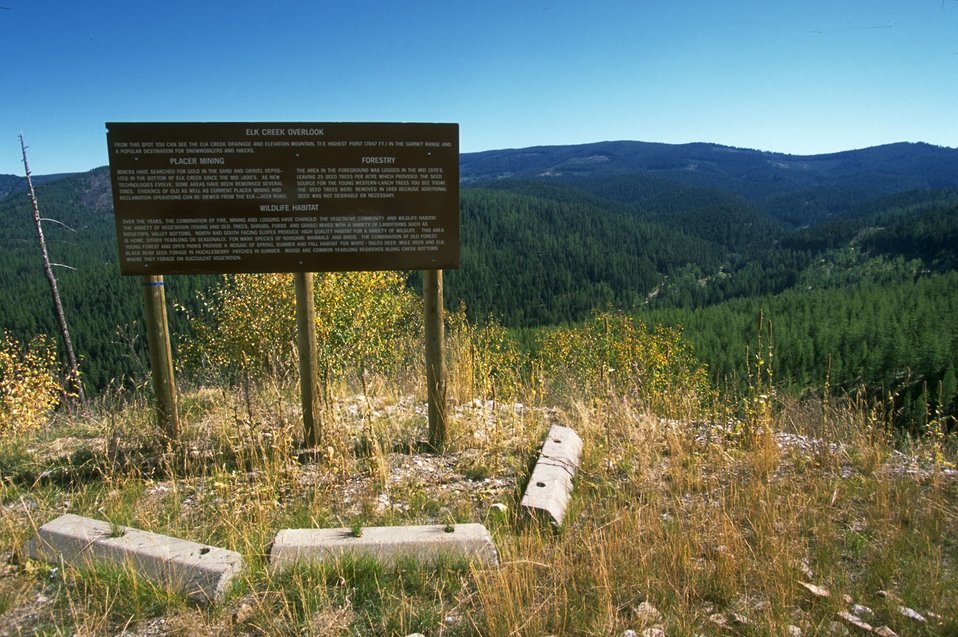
Garnet Back County Byway--Elk Creek overlook interpretive sign